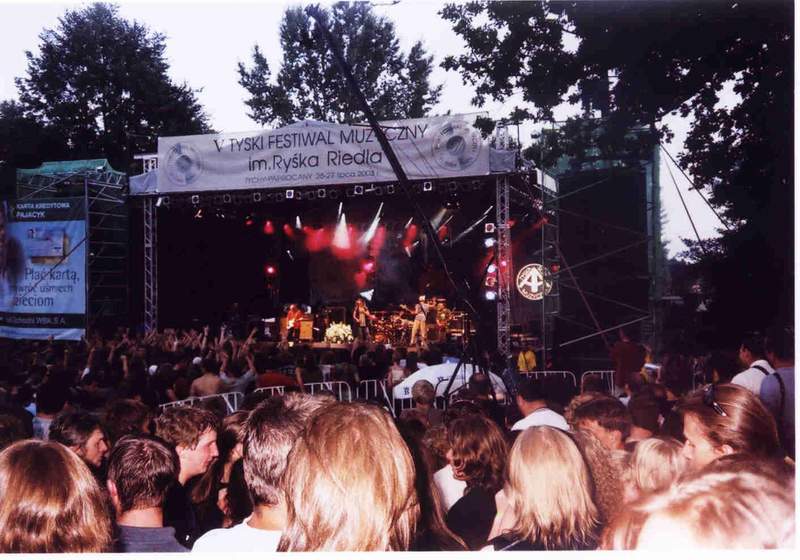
Polski: V Festiwal Muzyczny im Ryska Riedla w Tychach